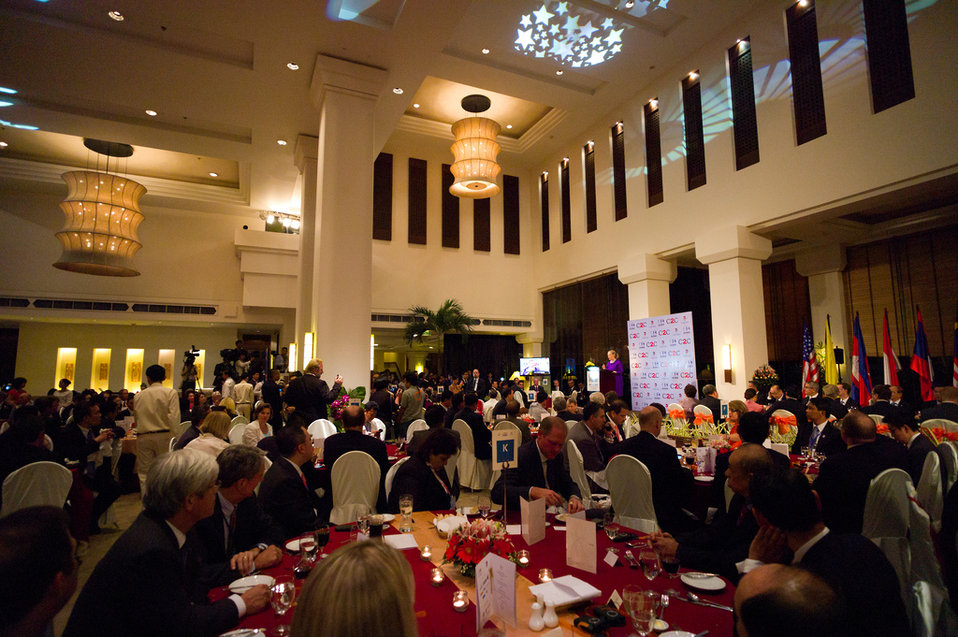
Secretary Clinton at the U.S.-ASEAN Business Forum and Dinner

U.S. Secretary of State Hillary Rodham Clinton participates in the U.S.-ASEAN Business Forum and Dinner in Siem Reap, Cambodia, on July 13, 2012.